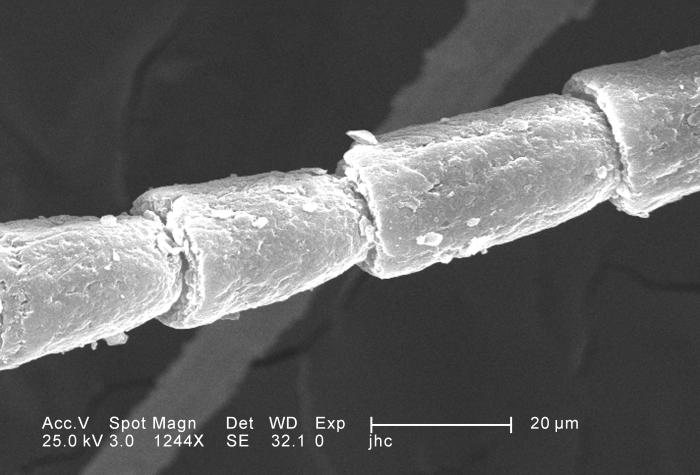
Under a moderately-high magnification of 1244X, which is 4X greater than PHIL 11810, this scanning electron micrograph (SEM) depicted some of the ultrastructural details displayed on the antennal flagellum emanating from the head region of a larval antlion. This larva is sometimes referred to as a 'doodlebug', because of the trails it leaves in the soft sand as it hunts for prey. This arthropod, i.e., jointed legs, undergoes dramatic morphologic changes when it metamorphoses into a beautiful flying antlion lacewing.